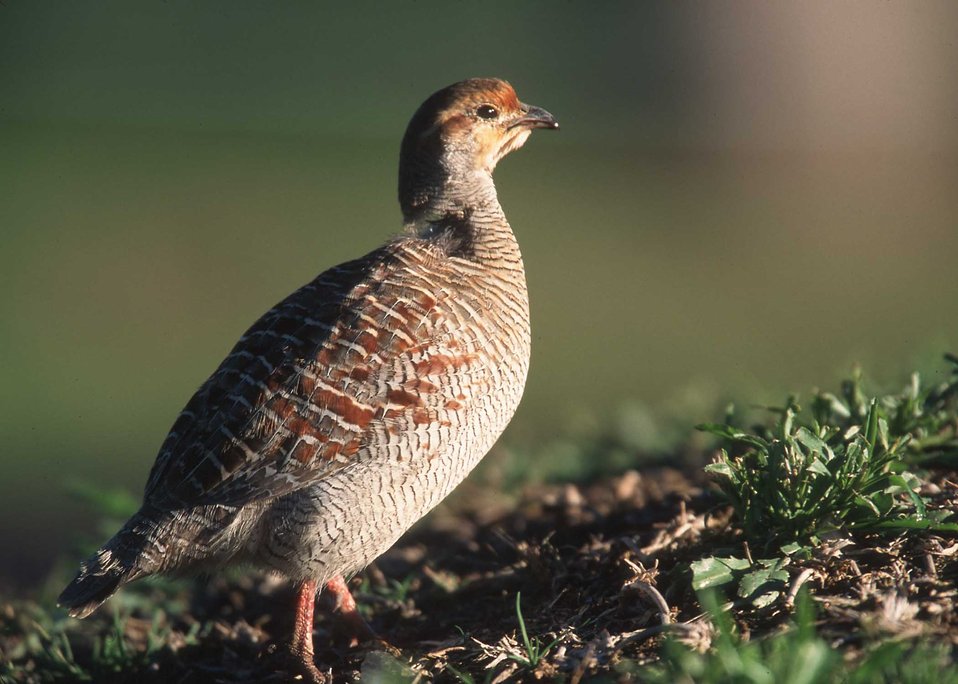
Gray Francolin.